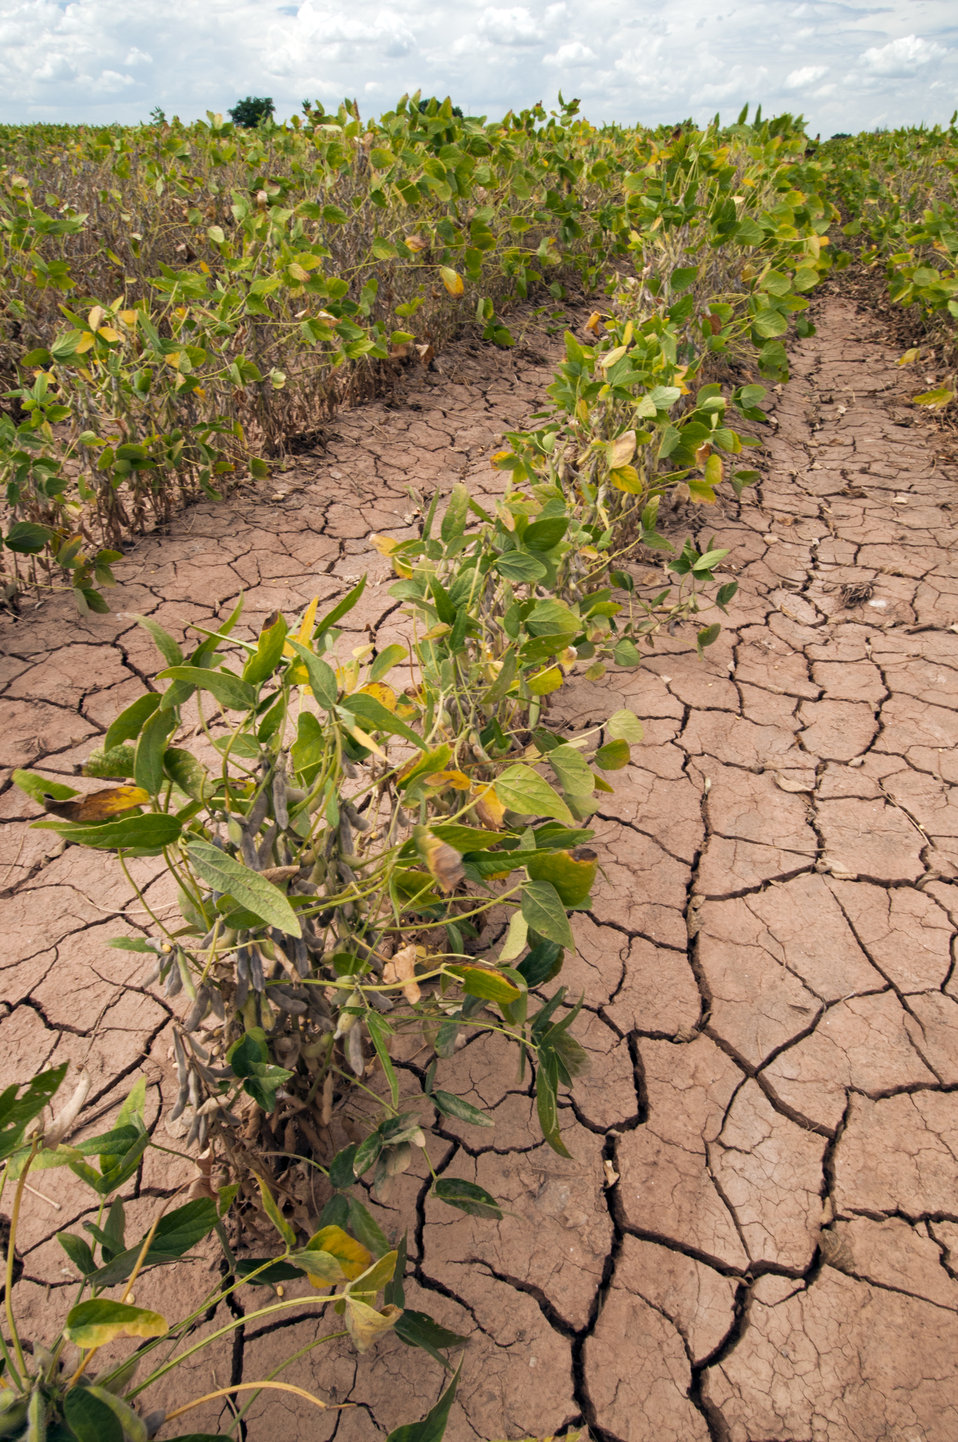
Soybeans show the affect of the Texas drought near Navasota, TX on Aug. 21, 2013.